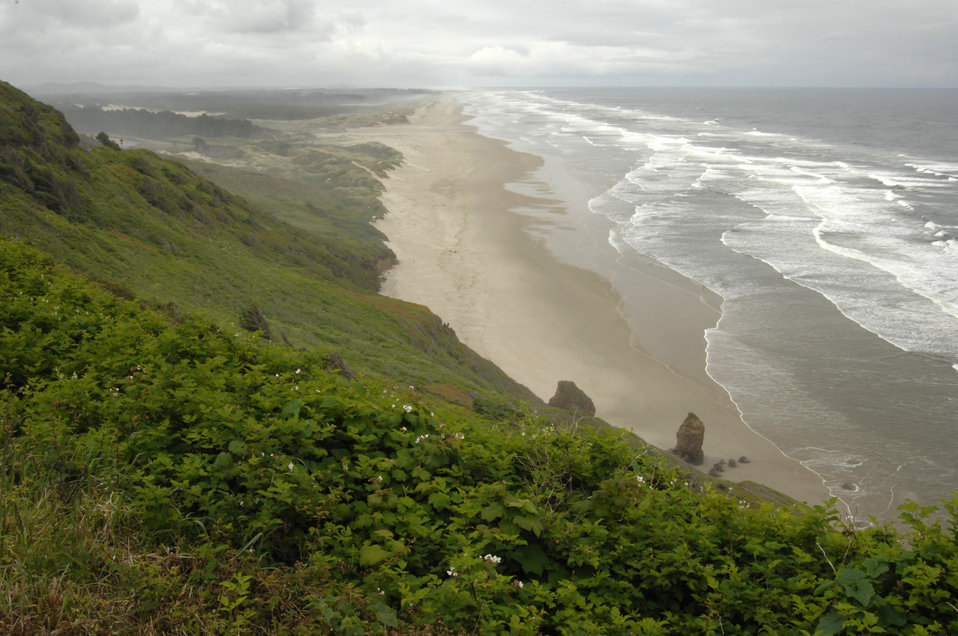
The Oregon Dunes at the National Recreation Area is located south of Florence, Oregon on June 10, 2008. The dunes lie along the coast, with the estuaries of three major river valleys connected by two long stretches of sand.